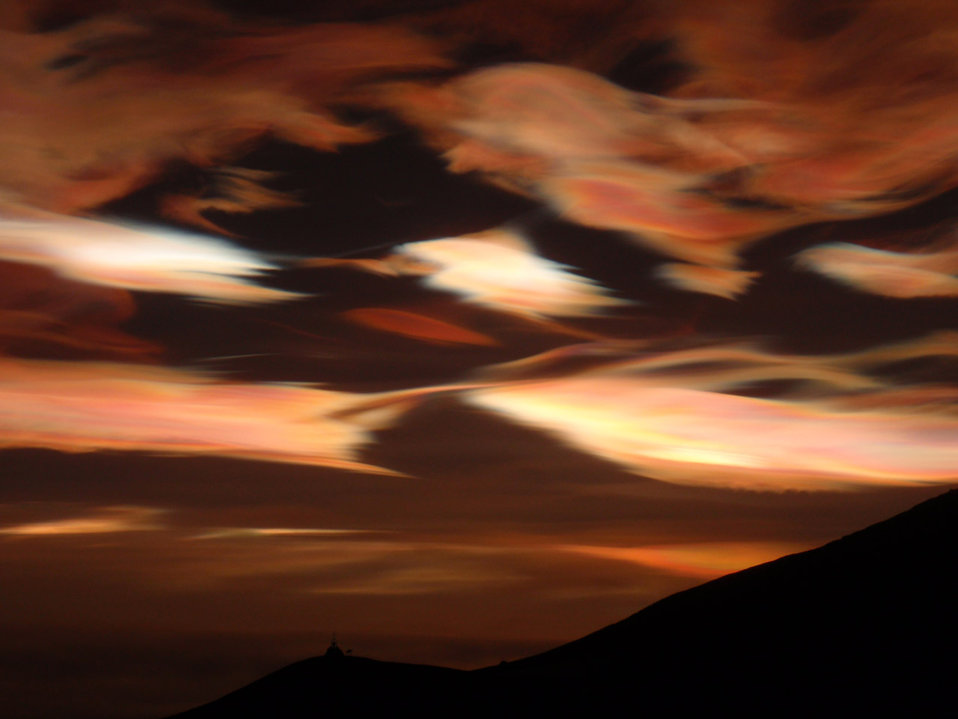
Nacreous clouds, which only appear in high latitudes at the end of winter, at mcmurdo station, antarctica.